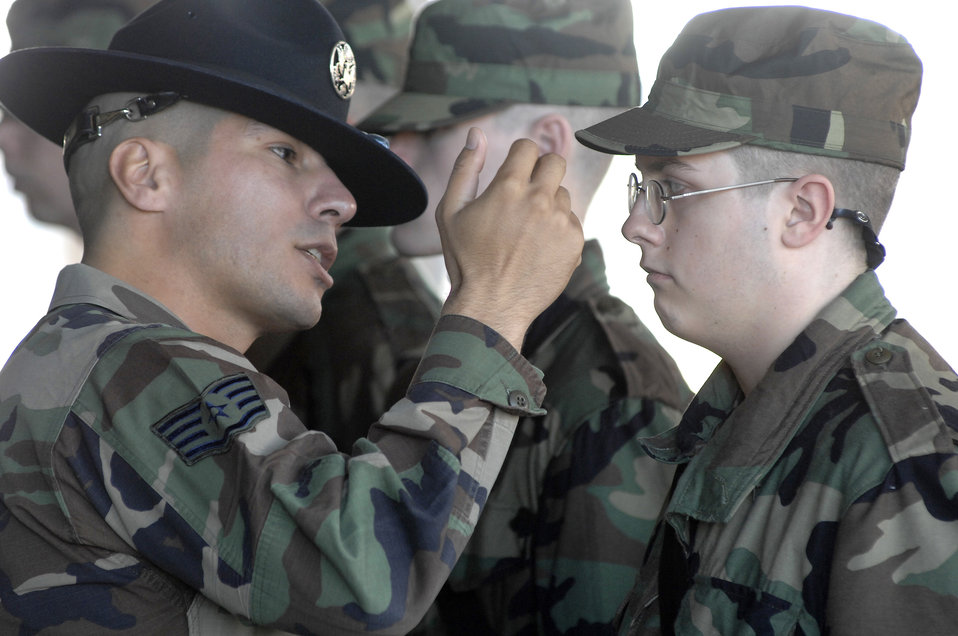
Serving through the season: Staff Sgt. Jacob Chavez

Staff Sgt. Jacob Chavez corrects a trainee during a drill practice Dec. 27 at the 322nd Training Squadron at Lackland Air Force Base, Texas. Sergeant Chavez is a military training instructor who is spending his holidays training new Airmen.